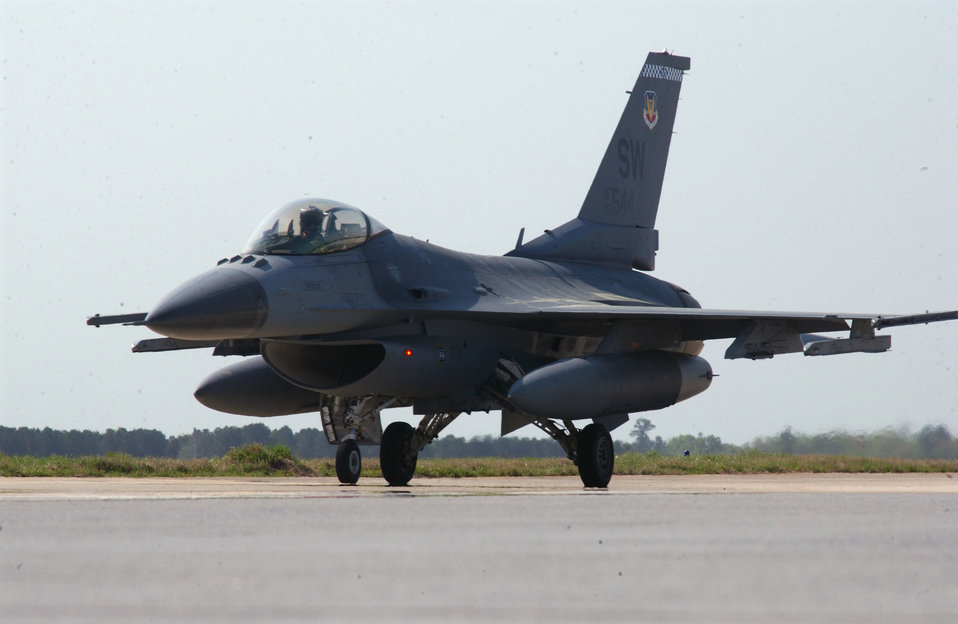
Prepare for launch

An F-16 Fighting Falcon from the 20th Fighter Wing prepares to launch in support of an operational readiness exercise March 27 at Shaw Air Force Base, S.C. Exercises prepare Airmen for future deployments.